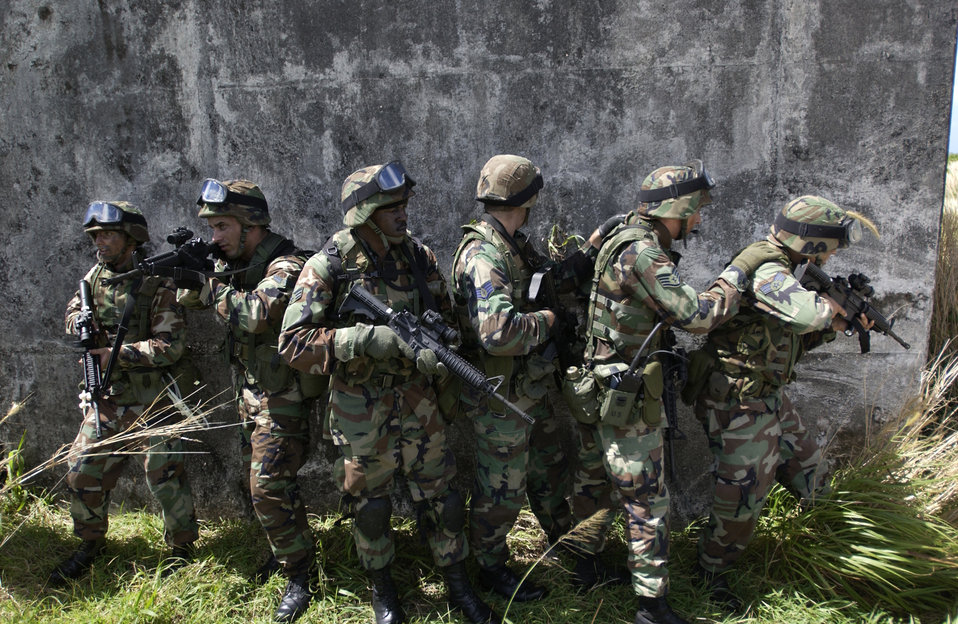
Ready to attack

ANDERSEN AIR FORCE BASE, Guam -- Security forces Airmen with the 613th Contigency Response Group perform a simulated attack on an urban terrorist target during an exercise held in the jungles of Guam on Feb. 17. The exercise consists of military operation urban terrain training, sniper training, navigation training and breaching techniques.